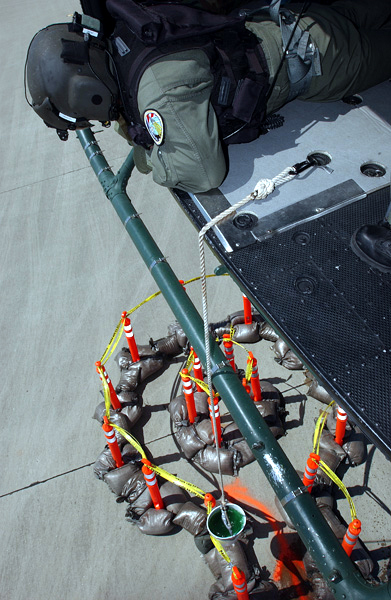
The 'Challenge' continues

VANDENBERG AIR FORCE BASE, Calif. -- Staff Sgt. Brian Waits, a UH-1N Huey helicopter flight engineer, calls out elevation distances to the aircraft commander while going through an obstacle course. Sergeant Waits and his crew are from the 30th Space Wing here and are competing in the helicopter operations portion of Guardian Challenge. The competition takes place here May 2 to 6 and tests the wartime readiness of teams representing each missile and space wing unit from Air Force Space Command. Competition events include timed exercises in missile-crew operations, missile and space maintenance, spacelift operations, space and missile communications, missile code controllers, helicopter operations, chefs and security forces.